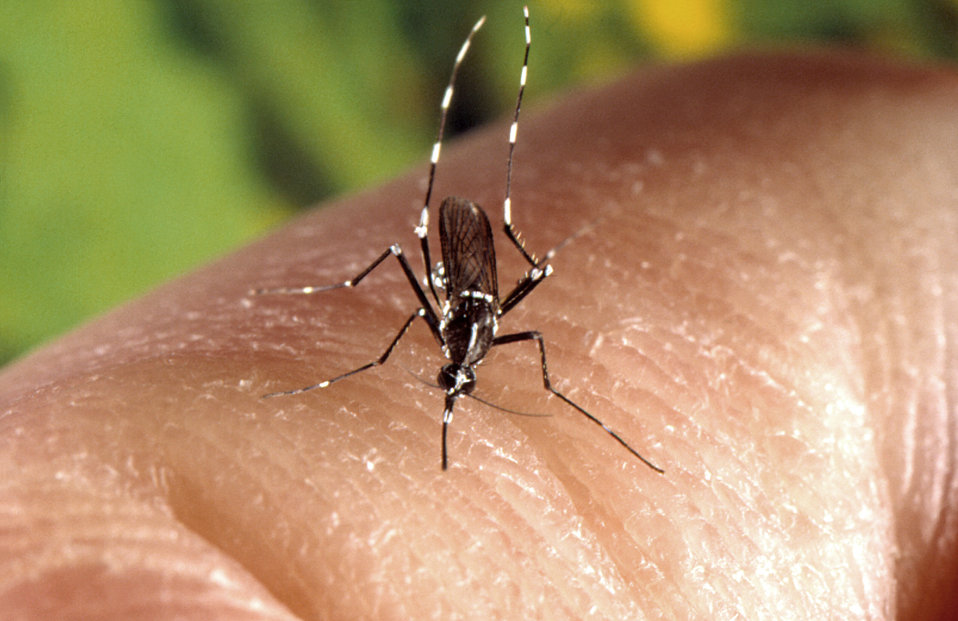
A female Aedes albopictus mosquito feeding on a human host.